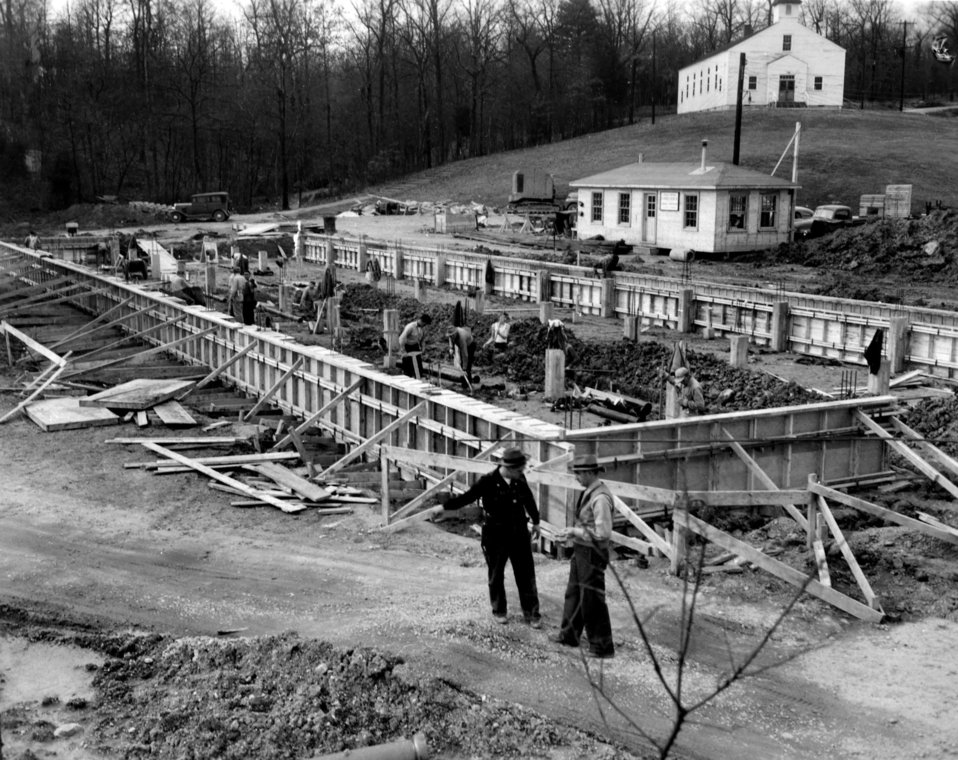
Early Construction Guest House Oak Ridge

5352-5a DOE photo by Ed Westcott 1949 Oak Ridge Tennessee